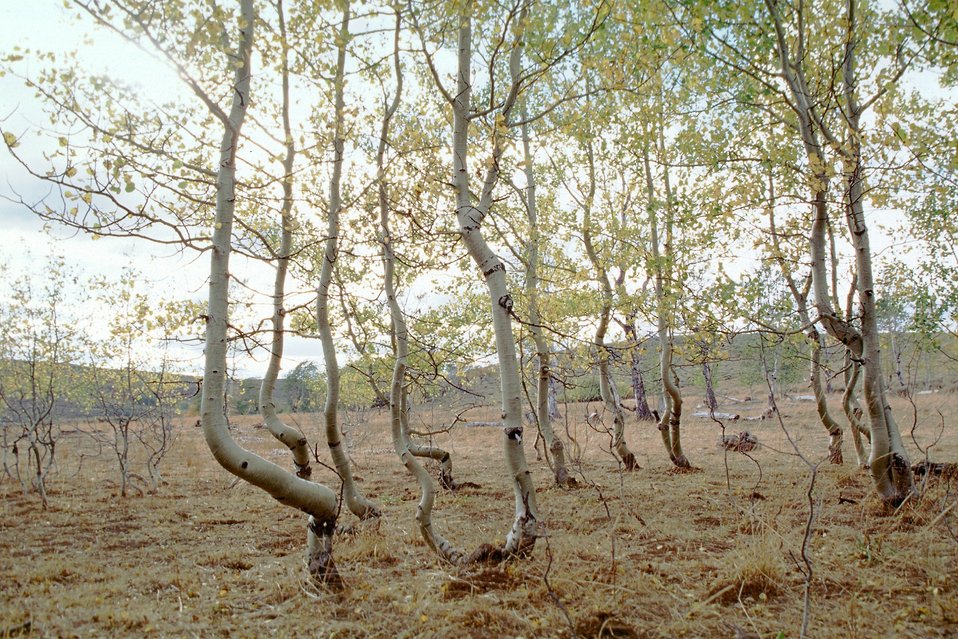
Aspen campsite below Jackman Park, Steen's Mountain.